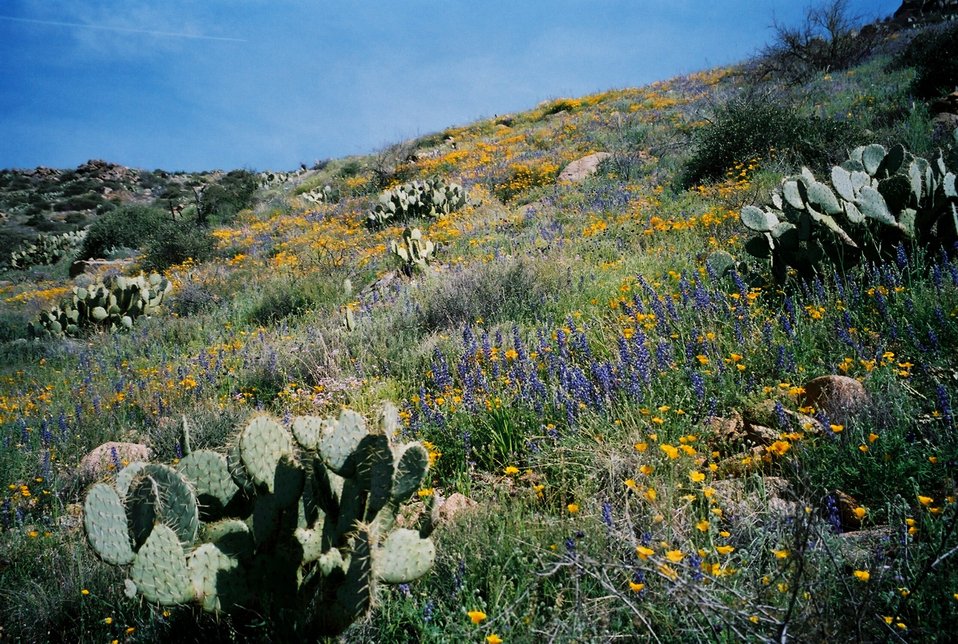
Many different kinds of beautiful wildflowers grow in the Agua Fria National Monument. Also shown is the Prickly Pear cactus.